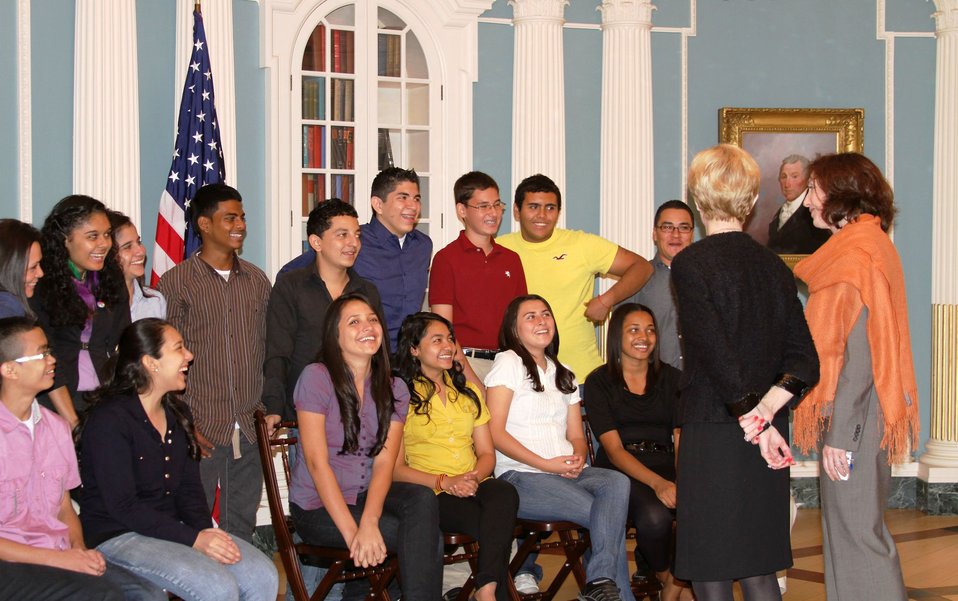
Assistant Secretaries Jacobson and Stock Meet With Central American Youth Ambassadors

Assistant Secretary of State for Western Hemisphere Affairs Roberta Jacobson and Assistant Secretary of State for Educational and Cultural Affairs Ann Stock meet with the Central American Youth Ambassadors at the U.S. Department of State in Washington, D.C., on March 11, 2013.